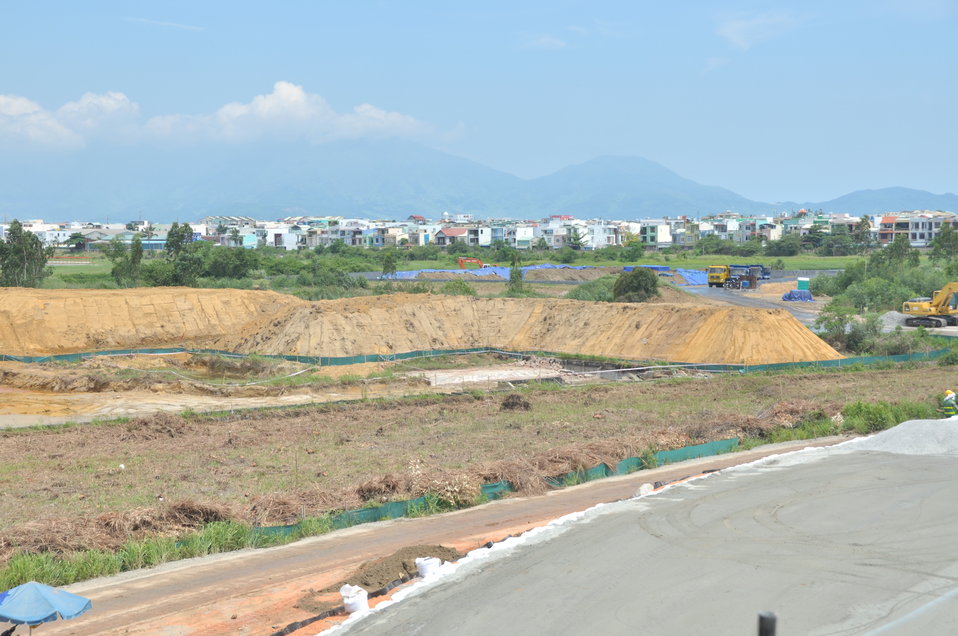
Site construction at the Environmental Remediation of Dioxin Contamination at Danang Airport

Progress at the Danang Airport remediation site
April 23, 2013